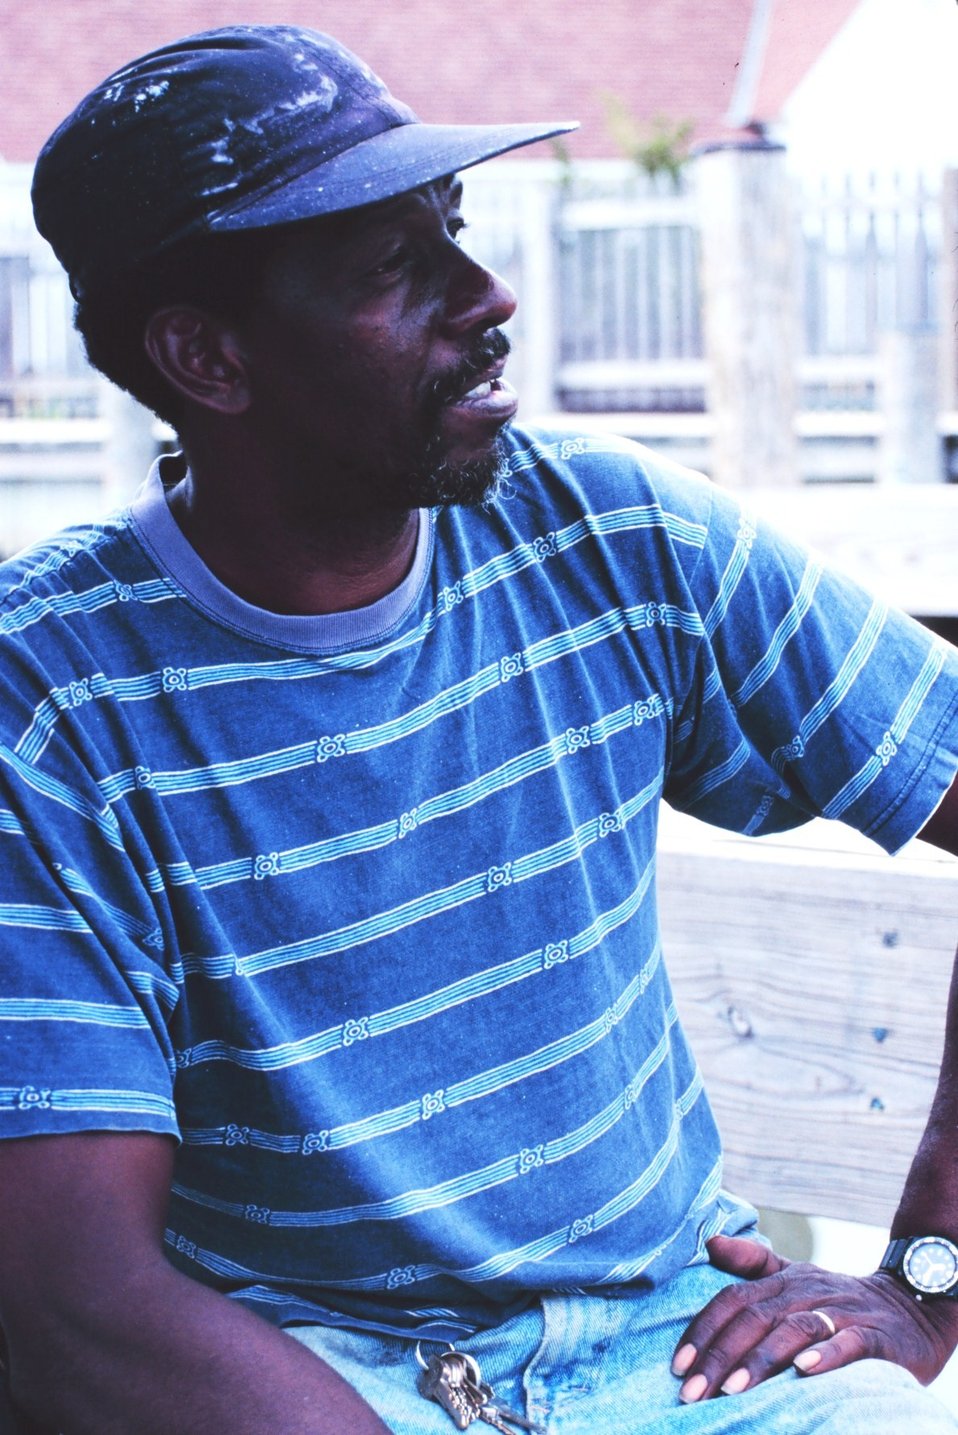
A Chesapeake Bay waterman at St. Michael's.